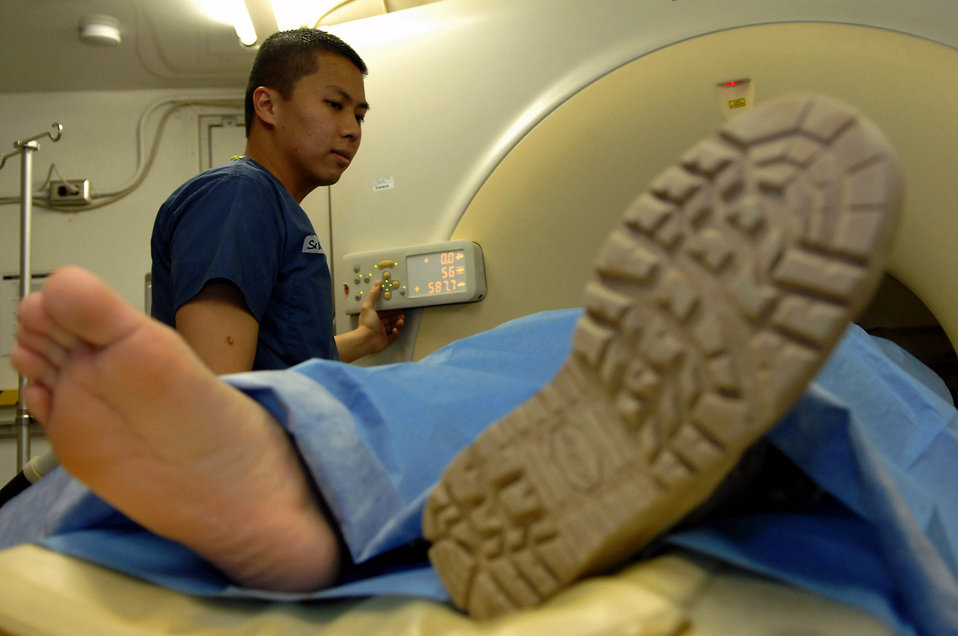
Airmen have X-ray vision

Radiology technologists Senior Airman Jason Masiclat performs a CT scan on a trauma patient Feb. 20 at the Air Force Theater Hospital at Balad Air Base, Iraq. The technician receives critical care patients straight from the emergency room and can have them scanned and ready to go into the operating room within minutes. Airman Masiclat is a 332nd Expeditionary Medical Support Squadron member deployed from Wright-Patterson Air Force Base, Ohio.